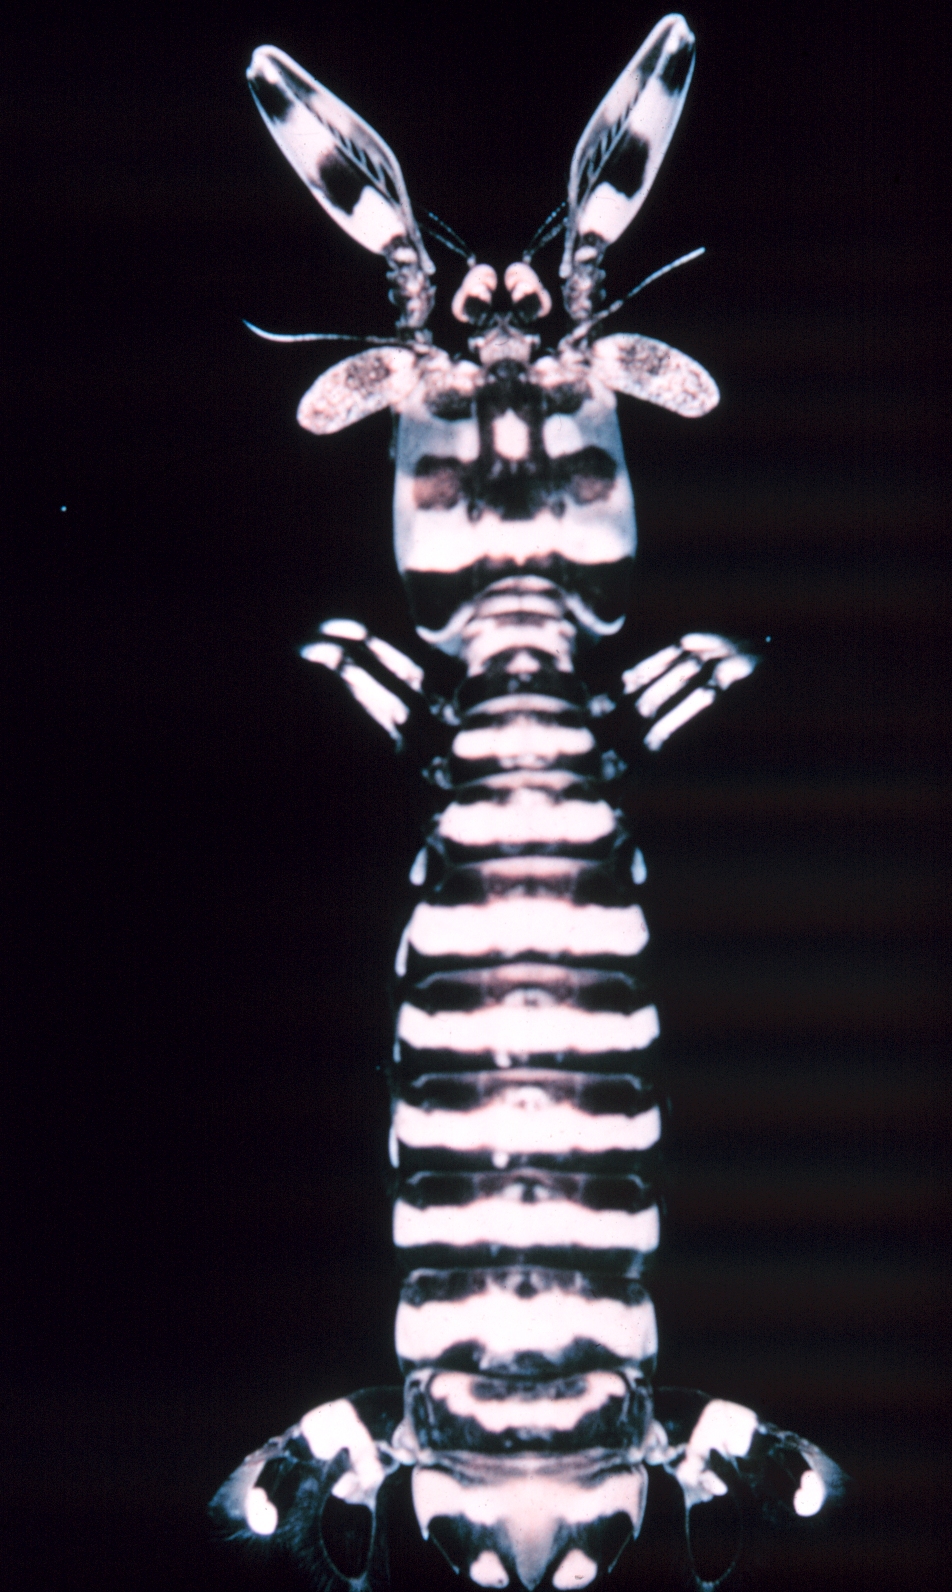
Mantis shrimp (Odontodactylus Scyllarus)